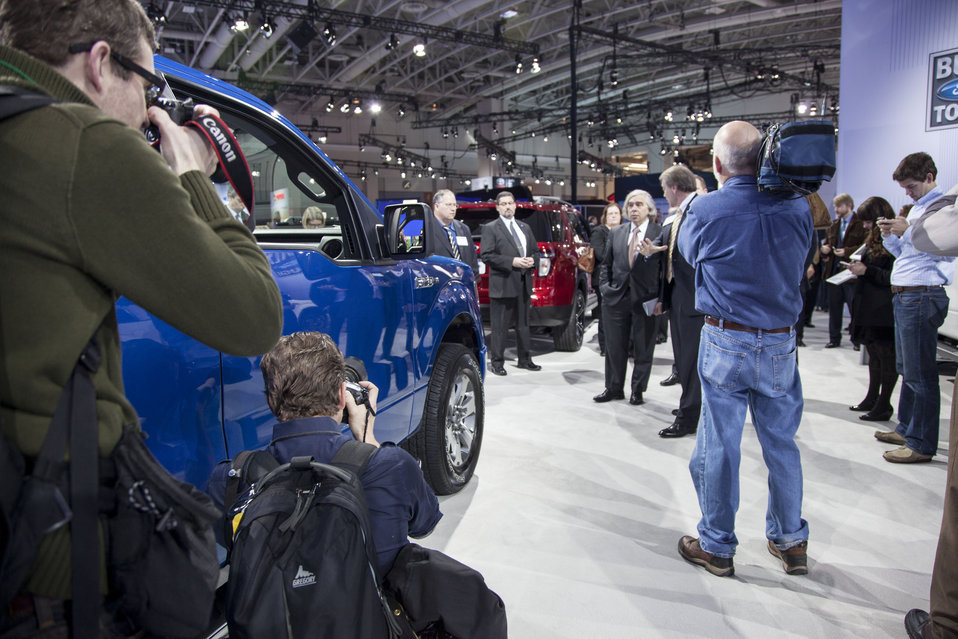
Secretary Moniz talks with a Ford representative about the company’s F-150, its best-selling vehicle. The new 2015 F-150 uses aluminum alloys throughout its body, helping to shave more than 500 pounds off the vehicle and leading to better fuel economy. Ford’s work on lightweight material builds on research the Energy Department supported in this area in the late 1990s and early 2000s.